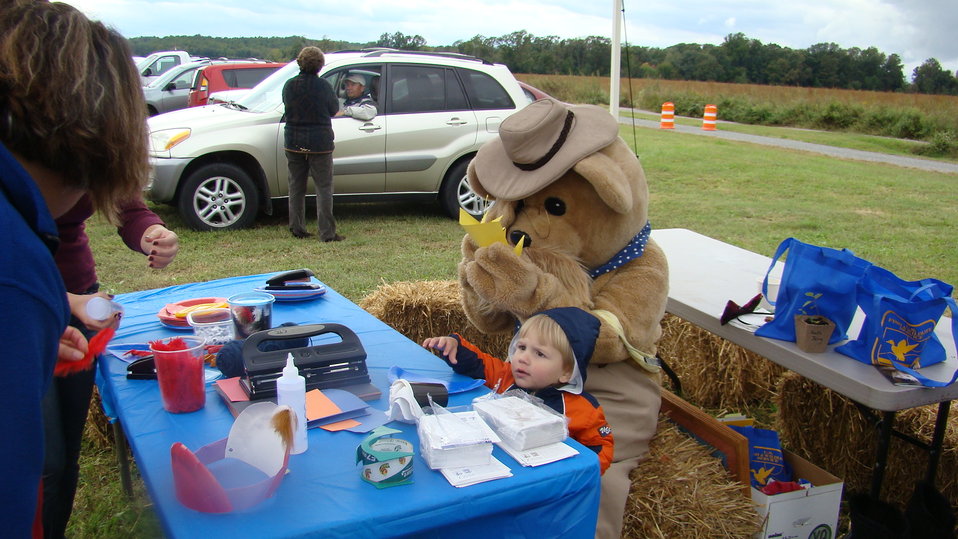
Rappahannock River Valley NWR 15th Anniversary

Young visitors making hats at the 'Go Wild!' celebration.